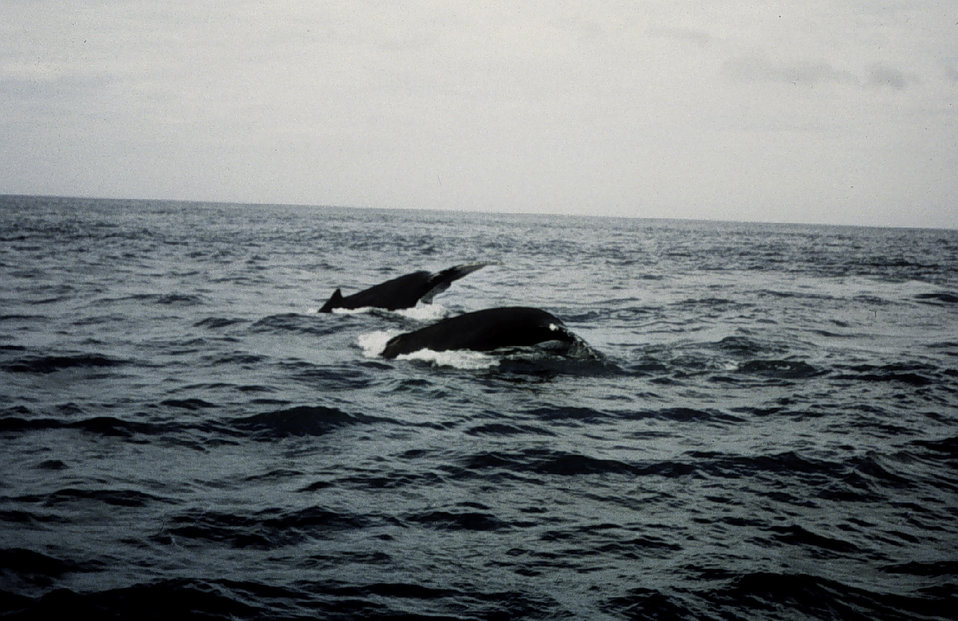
Humpback whales off Cape Cod.